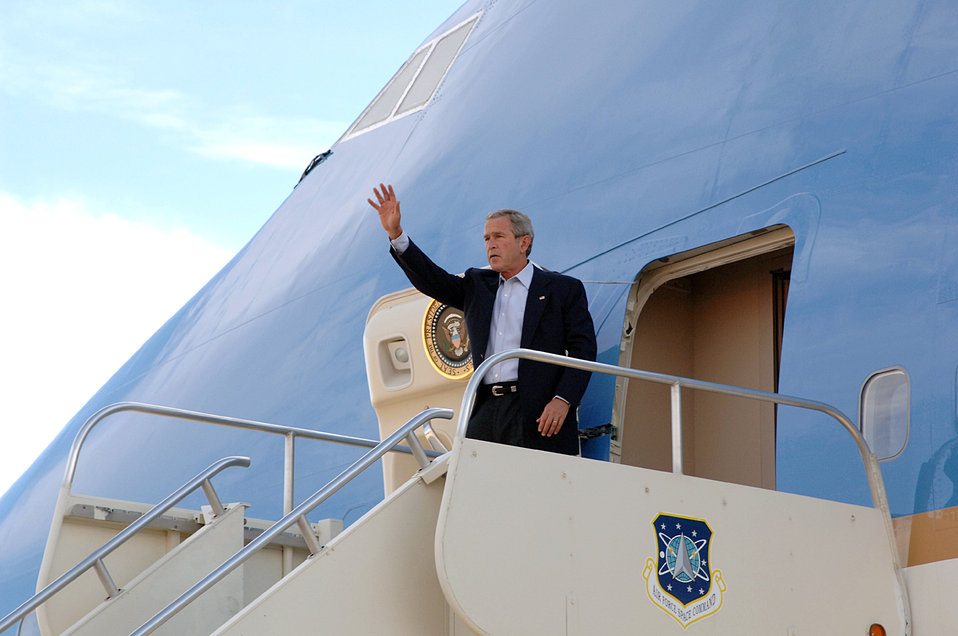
President monitors Rita at Northern Command

PETERSON AIR FORCE BASE, Colo. -- President George W. Bush arrives here Sept. 23. He came to U.S. Northern Command headquarters to monitor Hurricane Rita from the command's joint operations center.